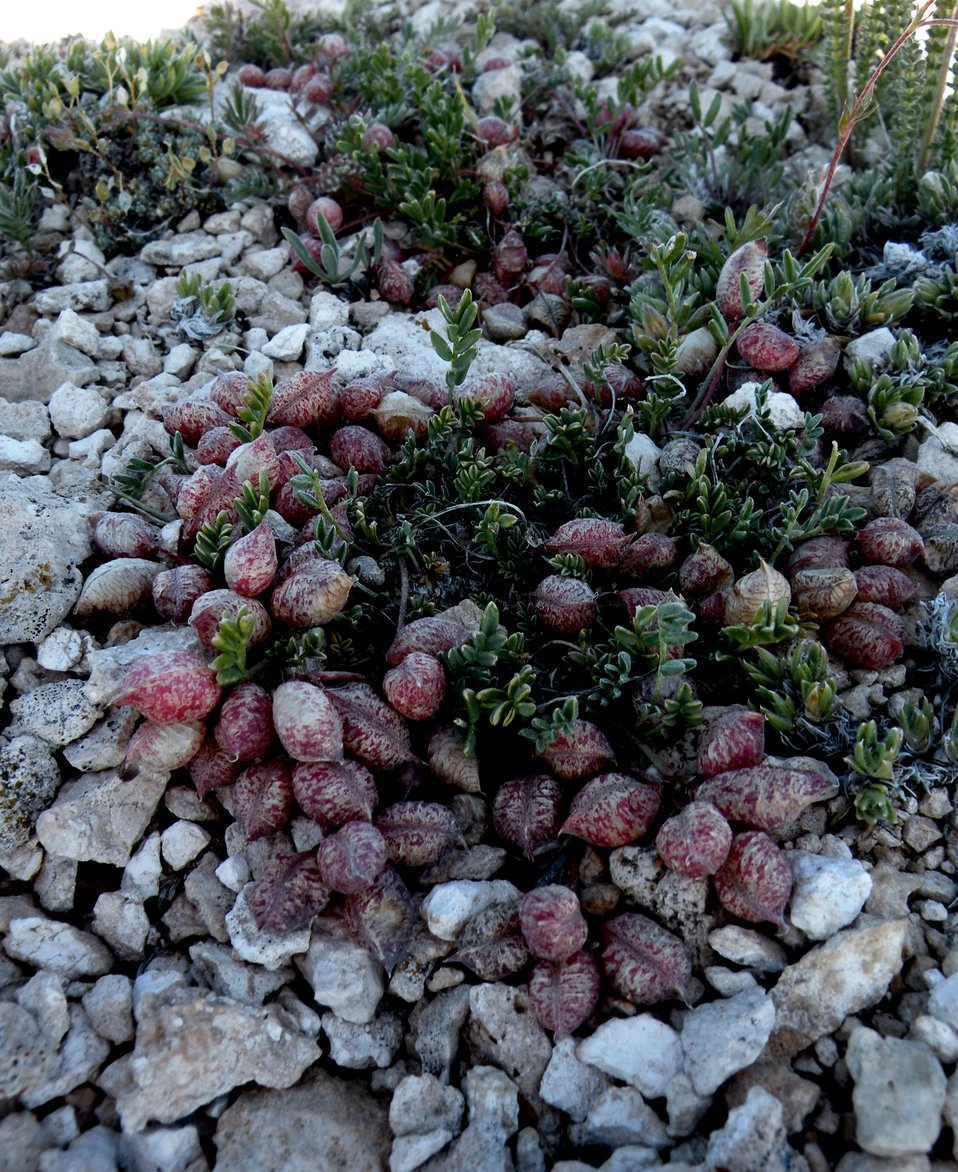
Heliotrope milkvetch (Astragalus montii)

This rare milkvetch is restricted to alpine areas in central Utah, where it is found on windblown ridges between 10,500 ft. and 11,000 ft. in elevation. Heliotrope milkvetch is endemic to Sanpete and Sevier counties, UT. It is listed threatened.